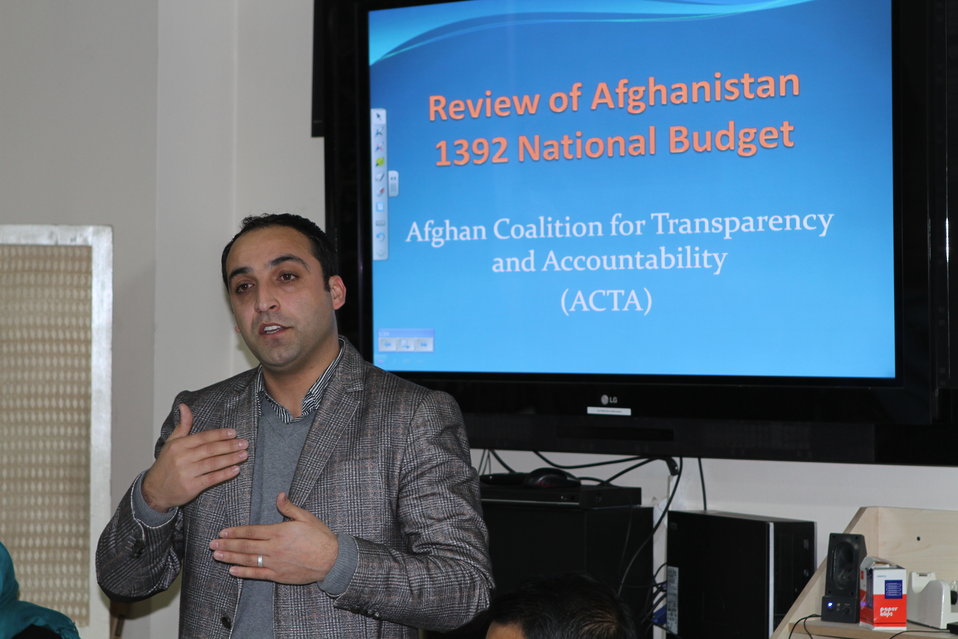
Presentation of the ACTA Civil Society analysis of the FY 1392 Afghan national budget